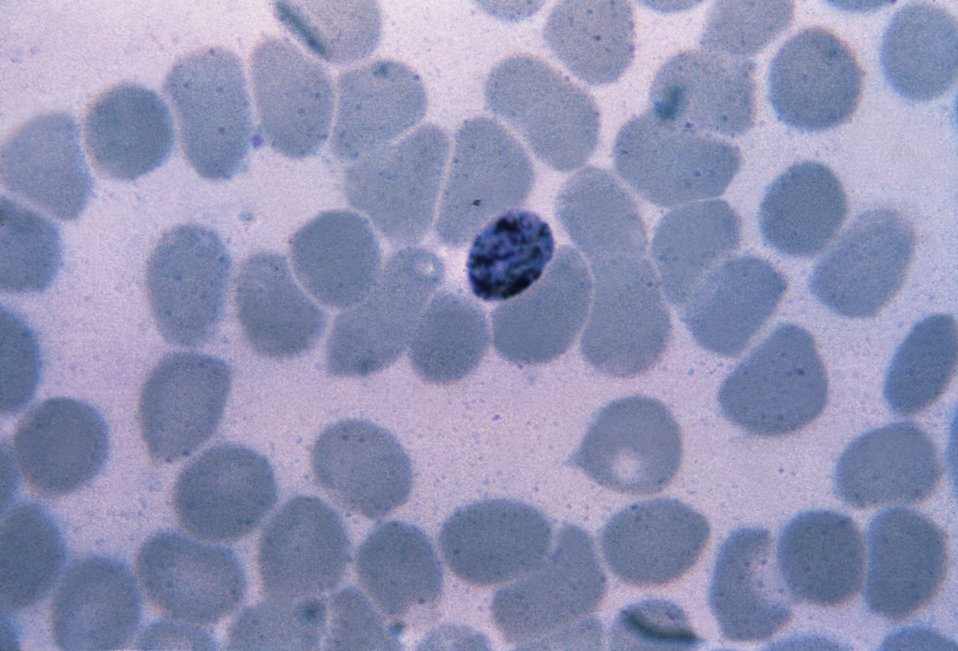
This thin film Giemsa stained micrograph depicts an immature Plasmodium malariae schizont.